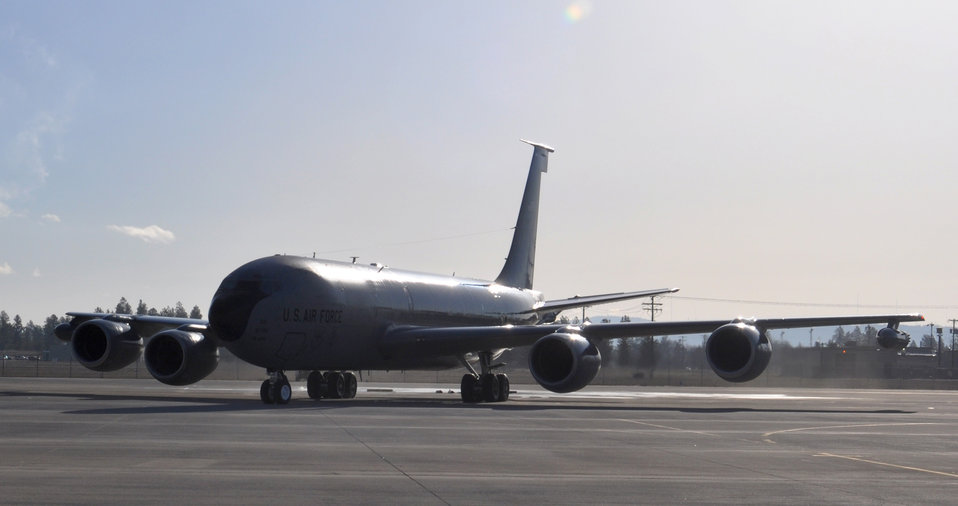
KC-135 crews support global missions

A KC-135 Stratotanker prepares to take off from Spokane International Airport to support operation Odyssey Dawn March 23, 2011.